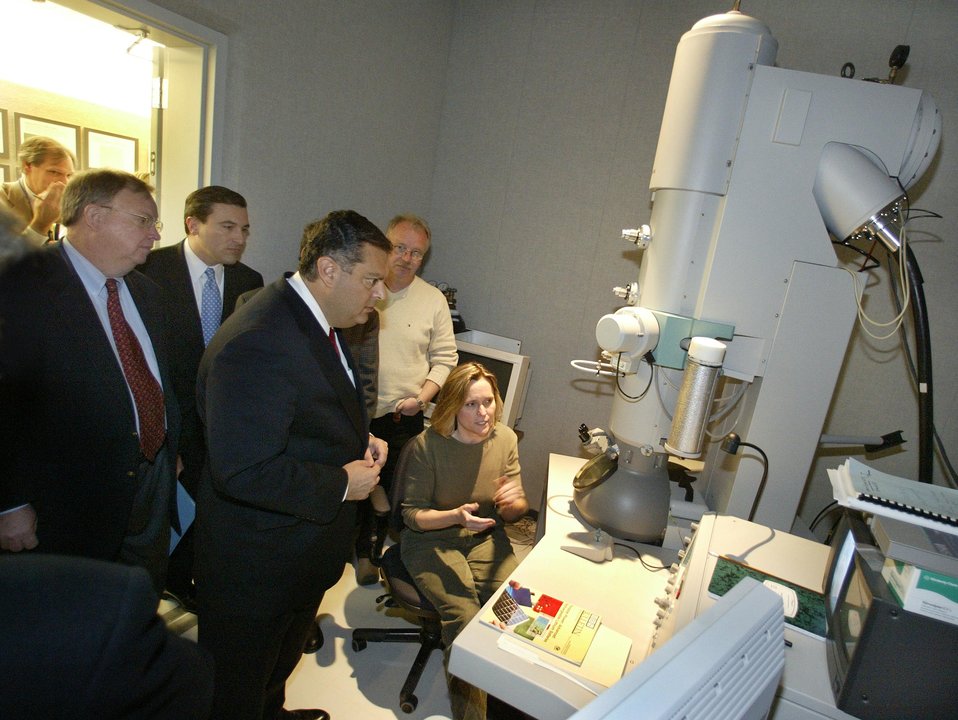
SECRETARY ABRAHAM WITH DR. SHANK, DIRECTOR OF LBNL (BEHIND THE SECRETARY), VIEW DEMONSTRATION OF THE ONE-ANGSTROM MICROSCOPE PROJECT, 11-26-02.

THE ONE-ANGSTROM MICROSCOPE (OAM) PROJECT IS DESIGNED TO PRODUCE ELECTRON MICROSCOPE IMAGES WITH SUB- ANGSTROM RESOLUTION FROM A MID-VOLTAGE HIGH-RESOLUTION TRANSMISSION ELECTRON MICROSCOPE. THE OAM IS PART OF THE LBNL'S NATIONAL CENTER FOR ELECTRON MICROSCOPY, A USER FACILITY PROVIDING SCIENTIFIC RESEARCHERS WITH ESSENTIAL RESOURCES FOR ELECTRON BEAM MICRO-CHARACTERIZATION OF MATERIALS.